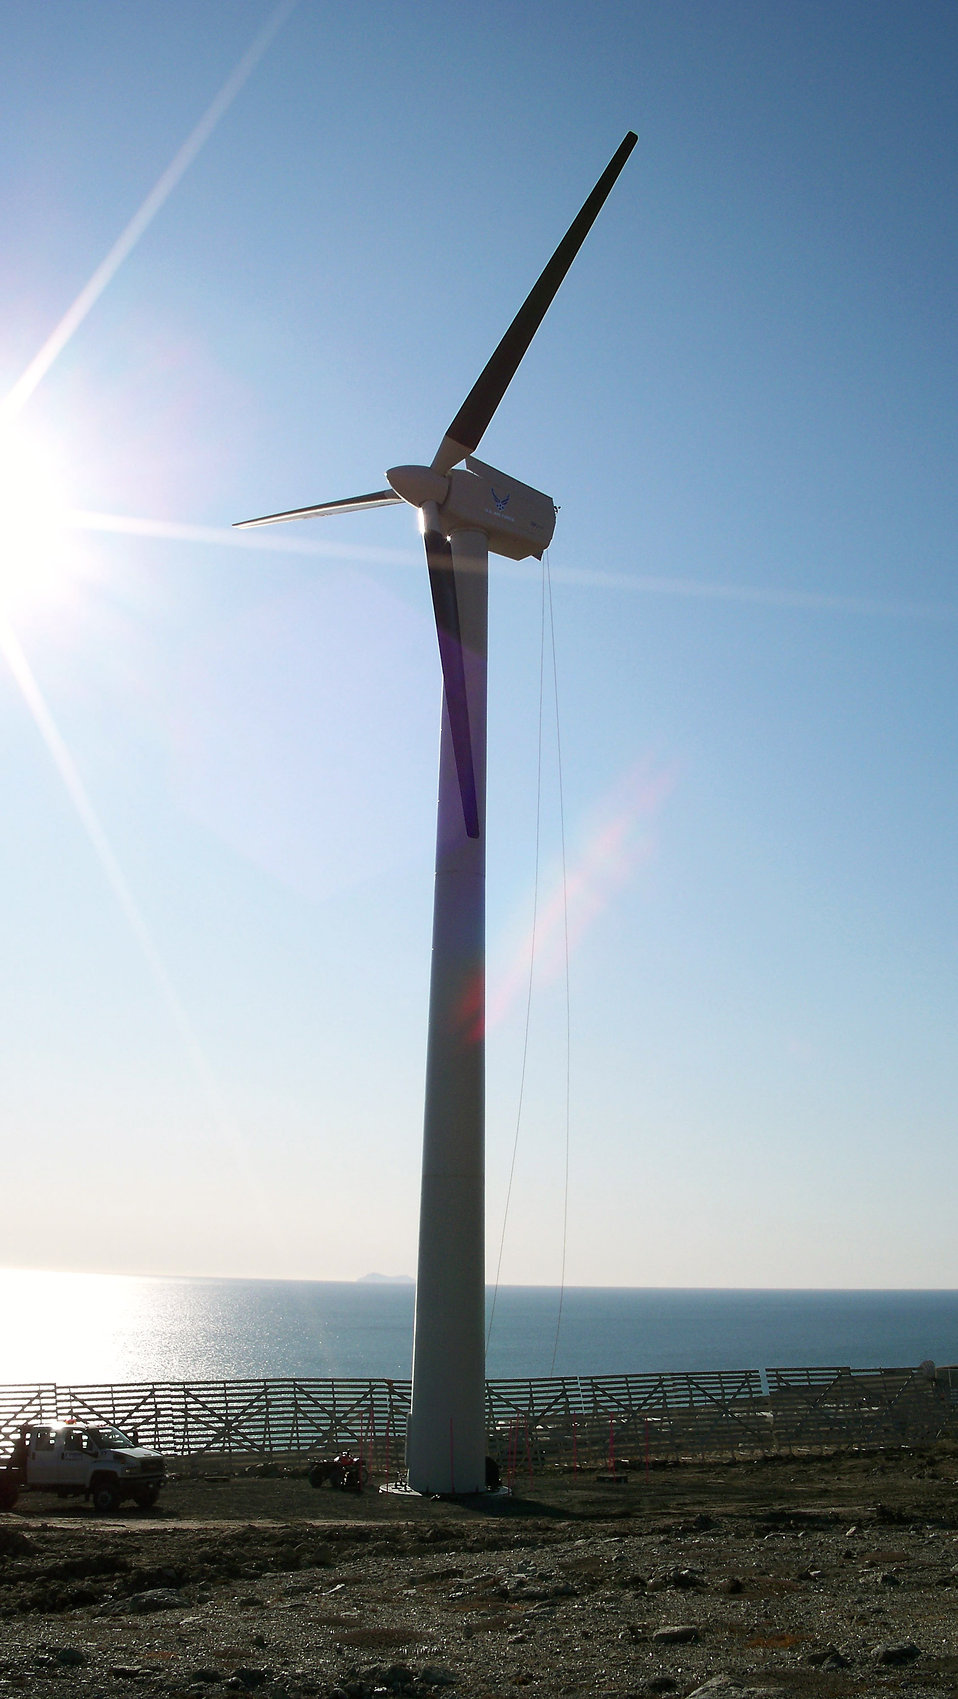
Steady winds blow in fuel savings

A wind turbine generator, towering more than 110 feet and with blades each 44 feet long, is being installed at the Tin City Long-Range Radar Station near Tin City, Alaska. The generator will augment the existing diesel-fueled power system at the site.